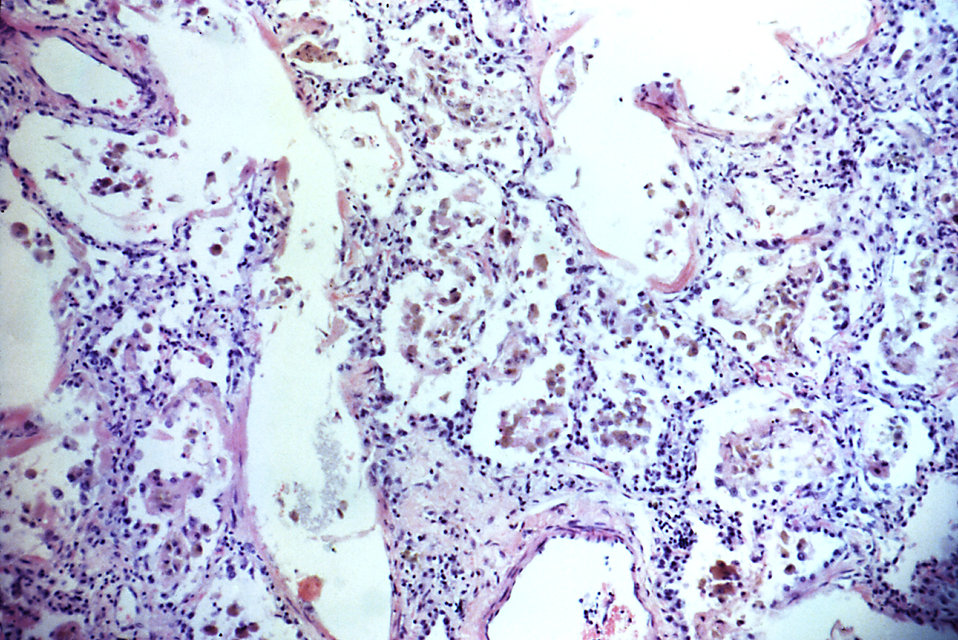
This micrograph reveals the histopathologic changes in lung tissue due to Toxic Shock Syndrome (TSS) taken during an autopsy.